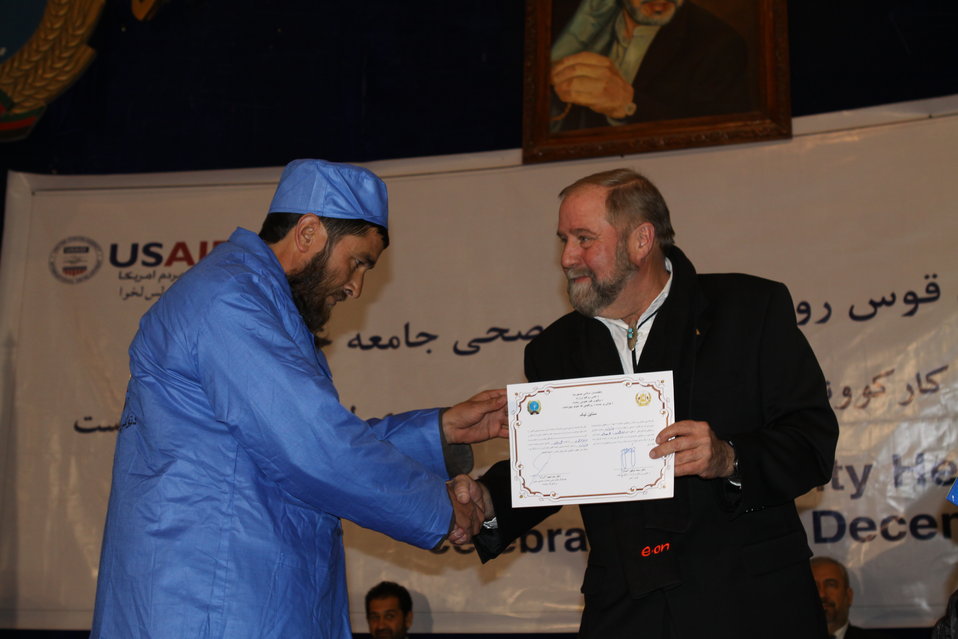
Community Health Workers Celebrated

Kabul, Afghanistan | December 5, 2010 — In support of the United Nations designated International Volunteer Day for Economic and Social Development, Afghanistan’s Ministry of Public Health celebrated its annual Community Health Worker Day today. Acting Minister of Public Health Dr. Suraya Dalil, USAID Senior Deputy Mission Director Robert Hellyer, other government officials, and international donors joined in recognizing the critical contribution of community health workers in Afghanistan and encouraging them to continue their voluntary support to their communities.
The event praised the contributions of the more than 22,000 volunteers throughout the country who deliver community level health-education, counseling, and services out of village health posts located in private homes. The Ministry of Public Health envisioned that community-based healthcare programs will actively encourage communities and families to adopt healthy lifestyles and behaviors, and provide families access to high quality and socially acceptable preventative medicine and life-saving services.
“We have 22,000 community health workers in Afghanistan that are able to implement the basic and standard medicines. They all have been trained through a job description,” said Minister Dalil. Addressing the health workers, she added, “I am proud and feel powerful that I have people like you.”
USAID-funded health projects collaborate closely with the Ministry of Public Health to improve the health and nutritional status of Afghans, provide quality primary healthcare, and promote healthy behaviors at the community and household-levels. USAID supported the training of more than 9,000 of the volunteer community health workers currently working in Afghanistan.
“On behalf of the American people, I congratulate the Community Health Workers for their diligence to gain the skills and knowledge necessary to serve their communities in this important role,” said USAID Senior Deputy Mission Director Hellyer. “USAID strongly supports community based health care and believes that quality community-based health services are essential to reaching Afghanistan’s Millennium Development Goals.”
To support the Basic Package of Health Services, USAID assisted in developing the community health worker training manual, helped train community health worker supervisors and master-trainers, facilitated in-service training, and produced and developed reporting tools, job aids, and education materials.